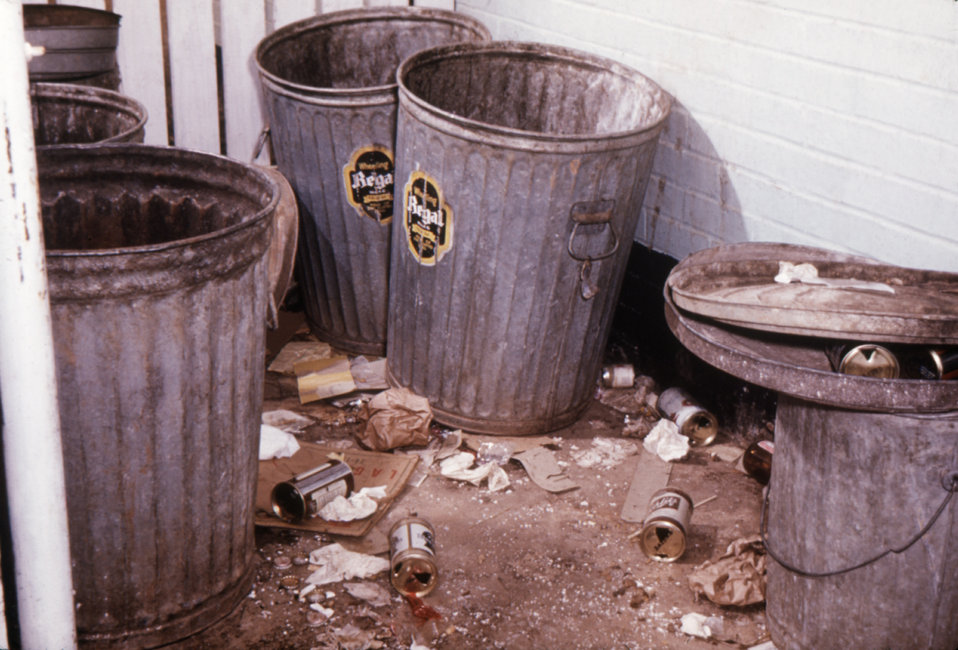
This garbage storage area with its open garbage bins that are surrounded by trash can attract rodents and insects to the site.